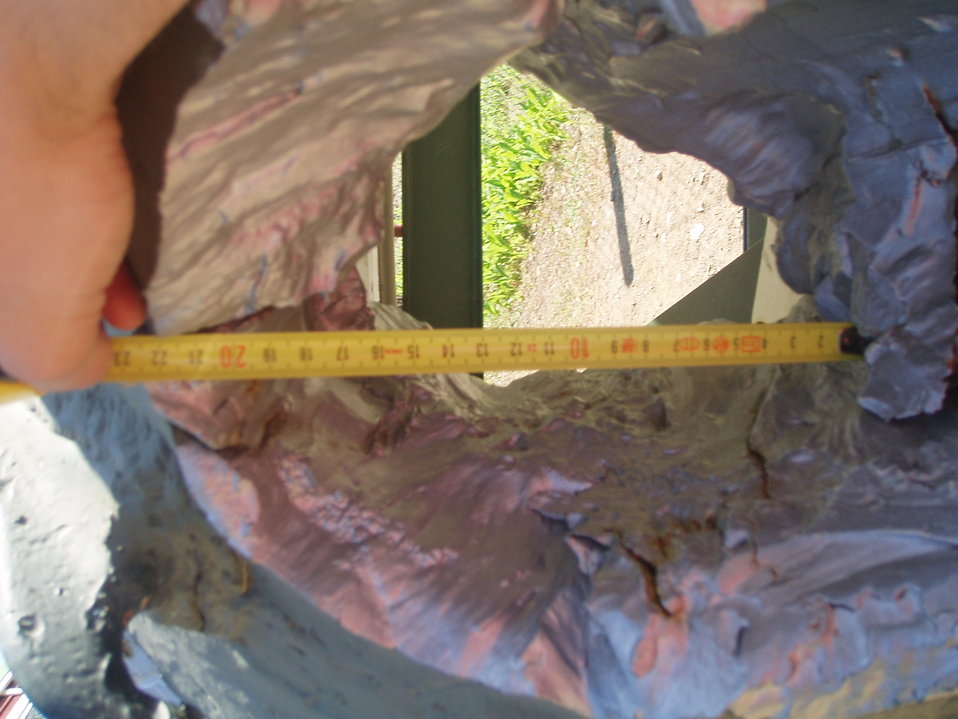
A 100 mm armor-piercing round hit on a T-54 turret front. Round fired by 100 mm D-10T series gun of T-54.